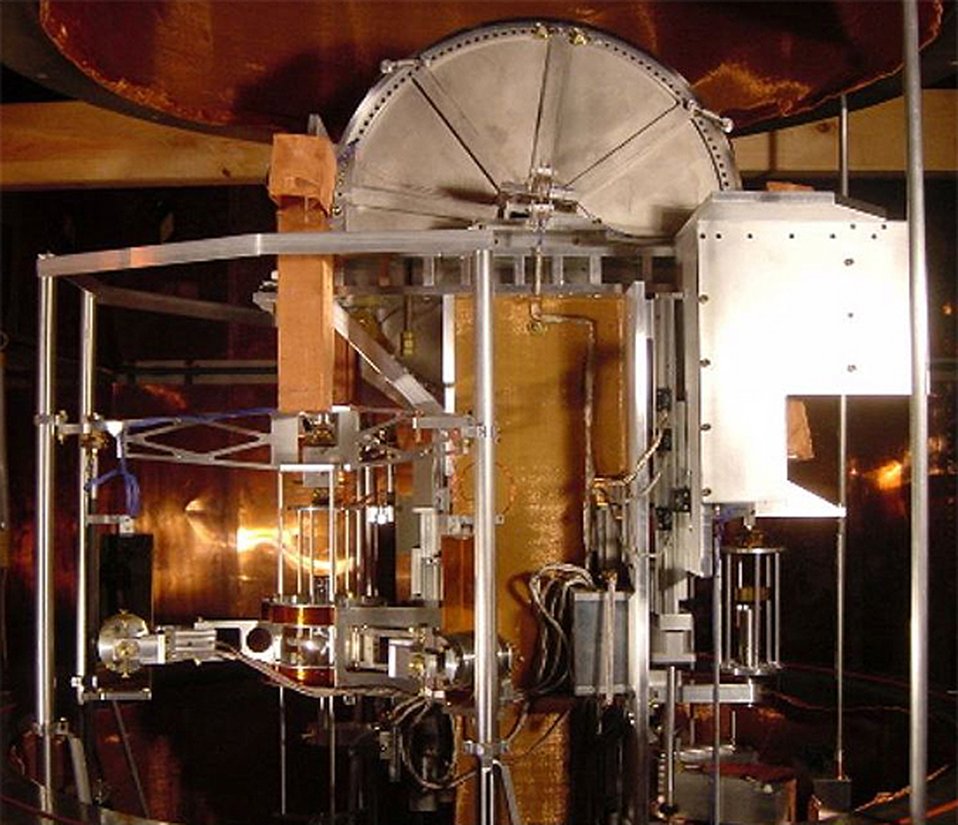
International System of Units (SI); Watt Balance

In support of a proposal to revise the International System of Units (SI) so that it would be based on constants of nature, NIST efforts such as the watt balance experiment (pictured) offer new ways of determining an accurate value of the Planck constant h, thereby contributing to a definition of the kilogram based on physical constants.